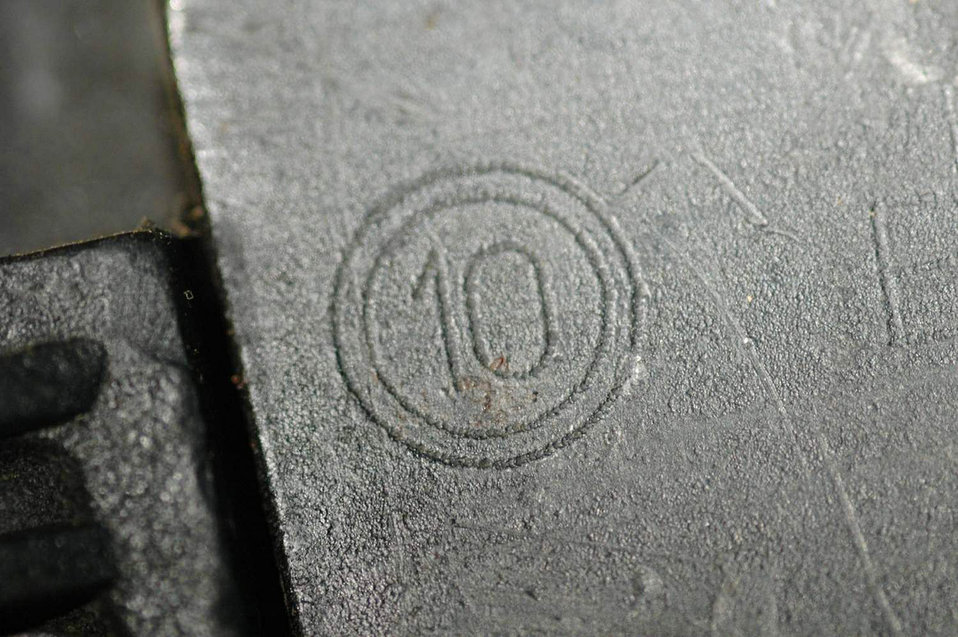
Battlefield detectives fight with fingerprints

A foreign weapon is identified by a Weapons Intelligence Team member as being a Bulgarian manufactured AK-74 assault rifle May 16 at Al Asad Air Base, Iraq. WIT members are skilled in improvised explosive device construction, fingerprinting, biometrics, foreign weapons, media exploitation and sensitive sight exploitation.